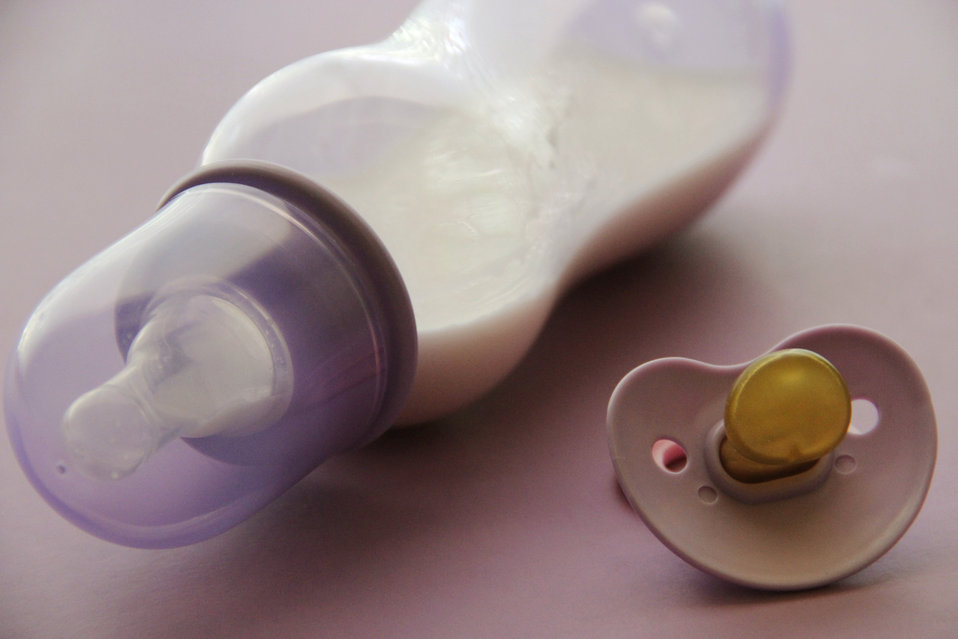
This image depicts two items commonly found associated with the care and maintenance of an infant: a half-filled bottle of milk, which was lying on its side, and a pacifier.